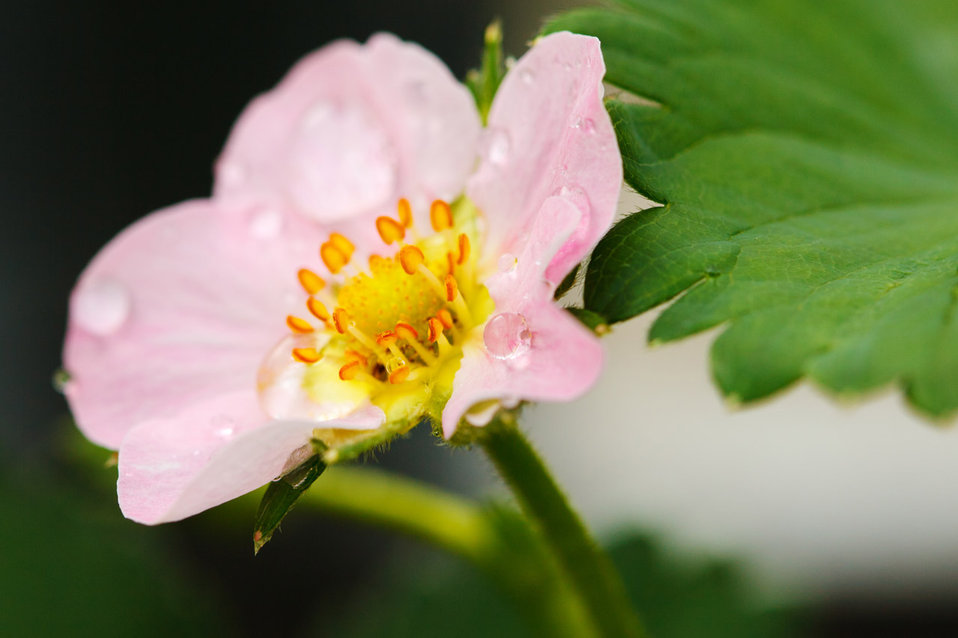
Flower of a strawberry

Macro photo of a pink flower of a strawberry with some water drops.